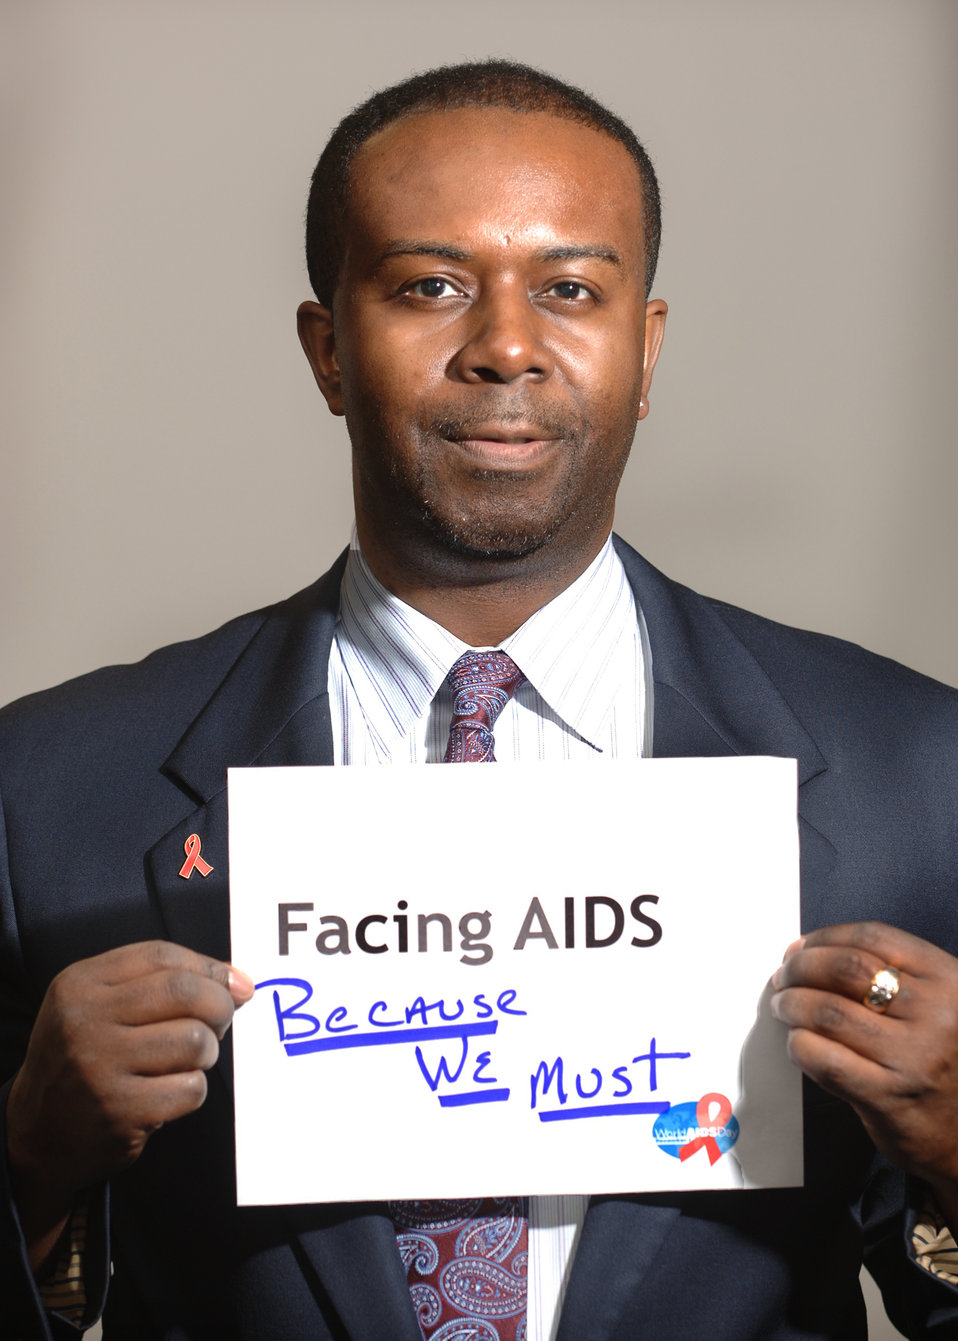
Harrison